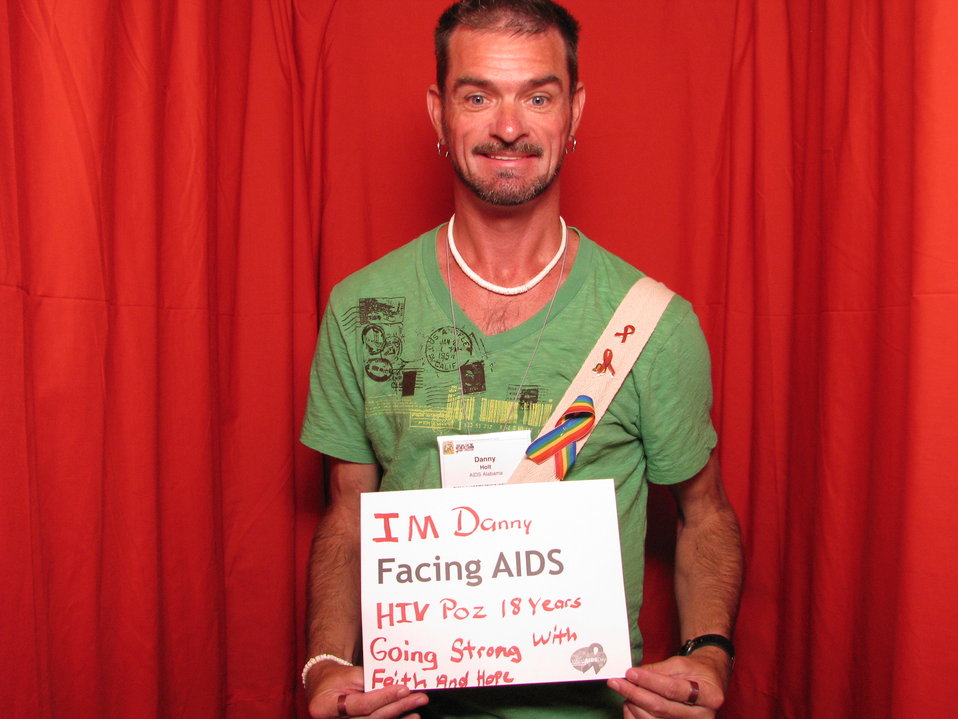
I'm Danny FACING AIDS, HIV Poz 18 years, Going Strong with Faith and Hope.

From the AIDS.gov photo booth at the U.S. Conference on AIDS, September 2010 (Orlando, FL).